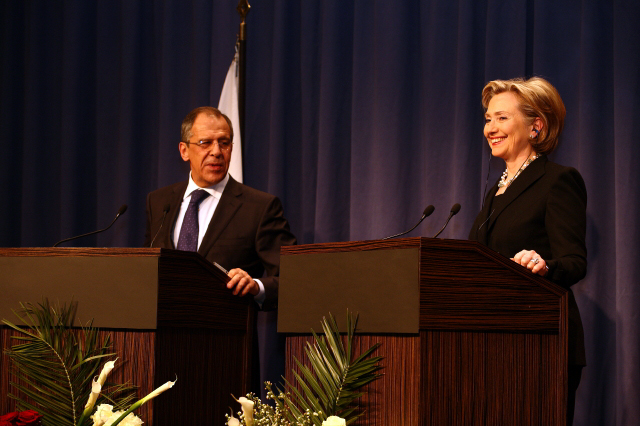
Press Conference With Russian Foreign Minister

Press conference after dinner meeting between U.S. Secretary of State Hillary Rodham Clinton and Russian Foreign Minister Sergey Lavrov in Geneva, Switzerland March 6, 2009.